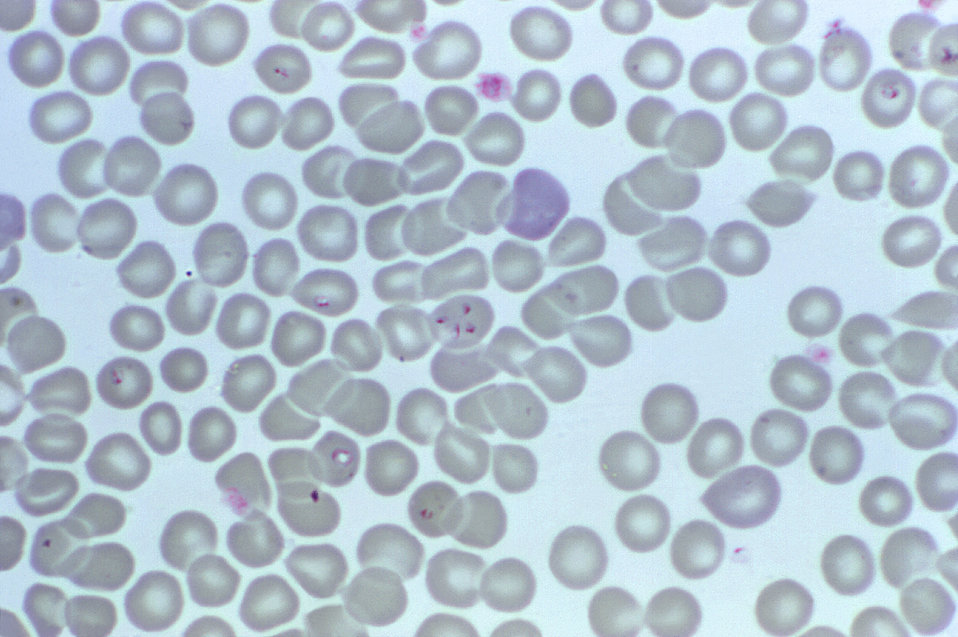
Note the developmental 'tetrad' configuration of these Babesia sp. trophozoites, which resemble P. falciparum.